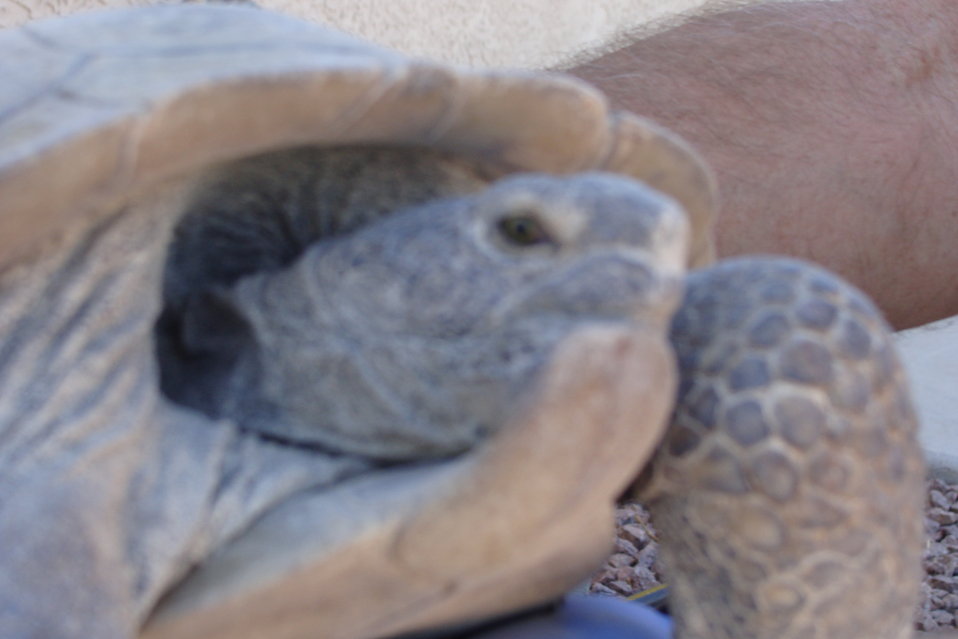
Mojave Desert Tortoise

The U. S. Fish and Wildlife Service has announced the availability of a Revised Recovery Plan for the threatened Mojave population of the desert tortoise (Gopherus agassizii) under the Endangered Species Act (ESA). The Plan takes a new approach to reversing declines in Mojave desert tortoise populations through a coordinated effort of science-based implementation and evaluation of conservation actions.

Unlike the previous Recovery Plan, which focused on mitigation measures, this Plan recognizes the need to adjust to the accelerating pace of environmental change and its impact on key resource management issues, such as corridors and connectivity. The Plan will be a living document that advances a natural resource management model where ongoing detection of changes and attribution of causes will provide the basic information on whether or not the desert tortoise or its ecosystem is changing beyond natural variability.

By continuous examination of vulnerability, exposure, sensitivity, and adaptive capacity of the desert tortoise to environmental change, resource managers will be able to update the Plan as it is being implemented with conservation measures that will help the desert tortoise recover.